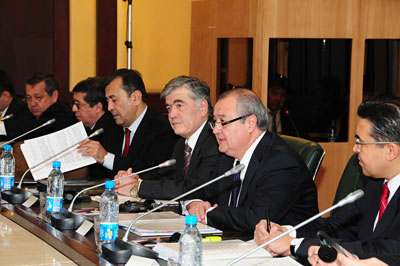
First Deputy Foreign Minister Kamilov Leads the Uzbek Delegation

First Deputy Foreign Minister Kamilov, second from right, leads the Uzbek delegation at the February 2011 Annual Bilateral Consultations with the United States in Tashkent, Uzbekistan, on February 18, 2011.